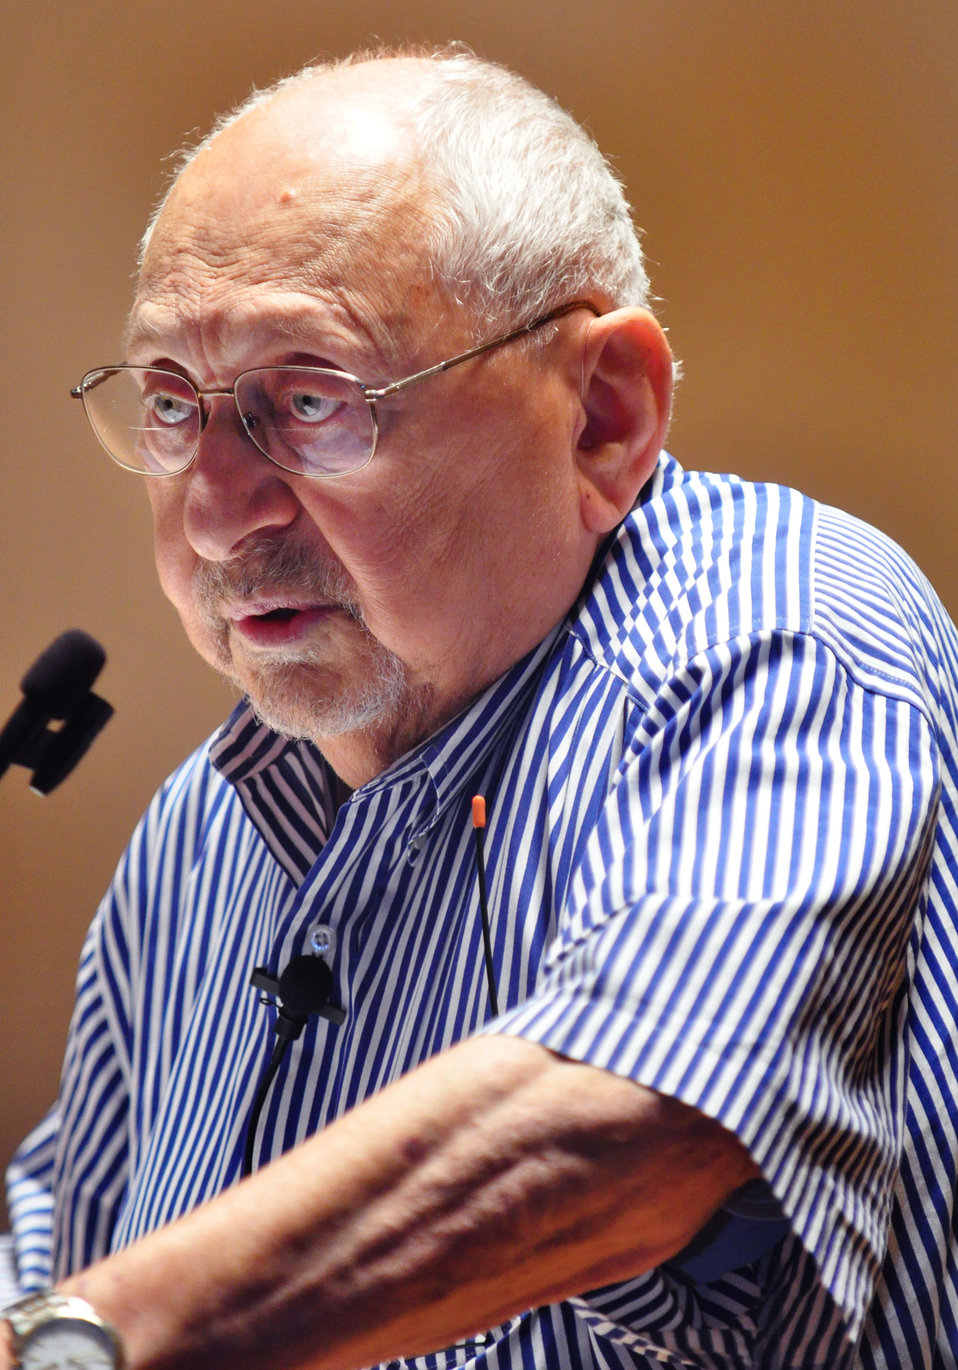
Holocaust Remembrance Program FEW Arthur Pais at AMSE in Oak Ridge

13-096 DOE photo Lynn Freeny 8-8-2013 Oak Ridge Tennessee